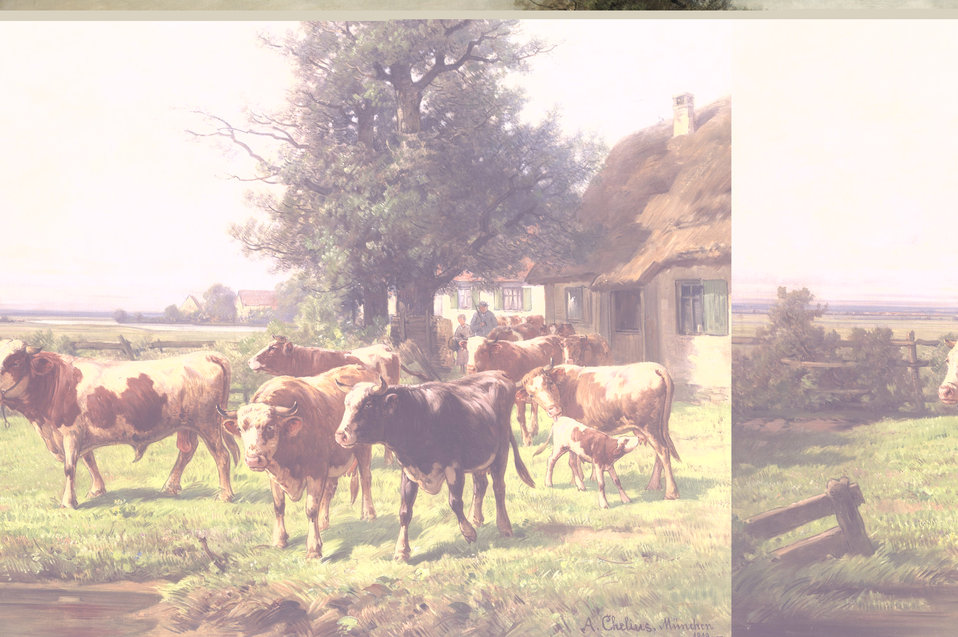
Deutsch: Kuhherde bei Dachau. Öl auf Leinwand. 80,5 x 118 cm. Signiert und ortsbezeichnet „München“, datiert „1919“. Verso alter Aufkleber mit Künstlername, Künstleratelieradresse und Bildtitel.